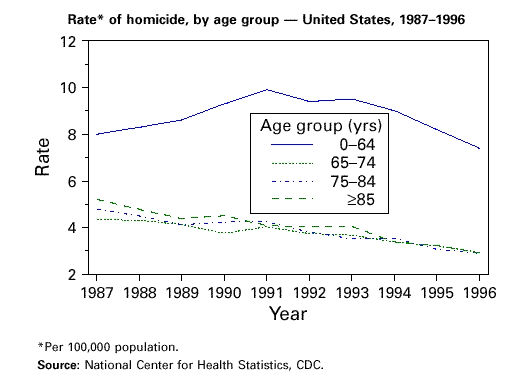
Rate of homicide by age group.